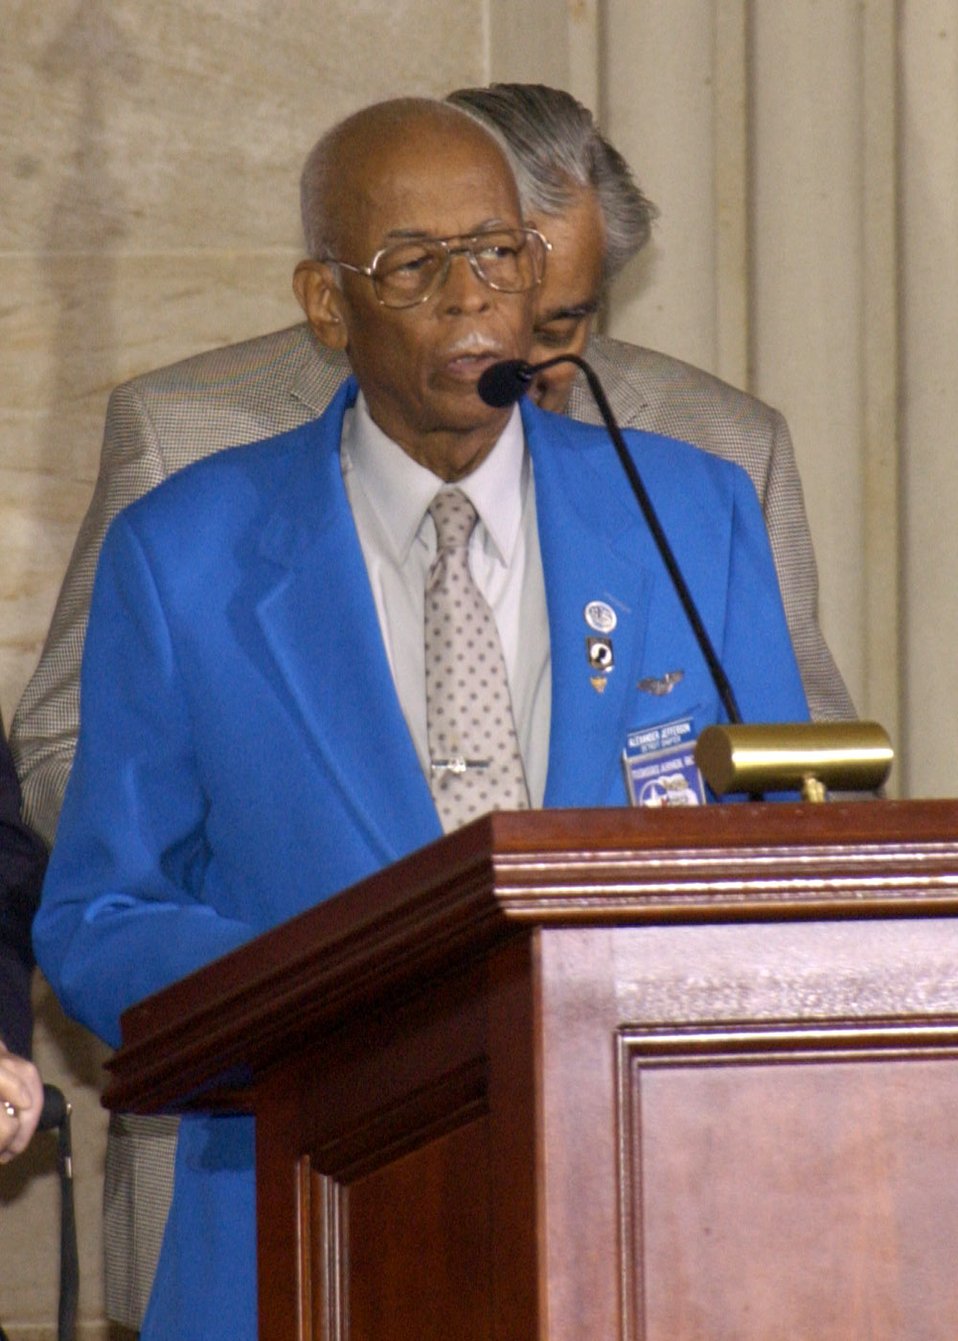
Congress honors Tuskegee Airmen

Retired Lt. Col. Alexander Jefferson, a Tuskegee Airman, addresses the crowd during a Congressional Gold Medal Ceremony March 29 at the Capitol Rotunda in Washington. The award recognized the accomplishments of the Tuskegee Airmen. Colonel Jefferson was a pilot with the 332nd Fighter Group during World War II.